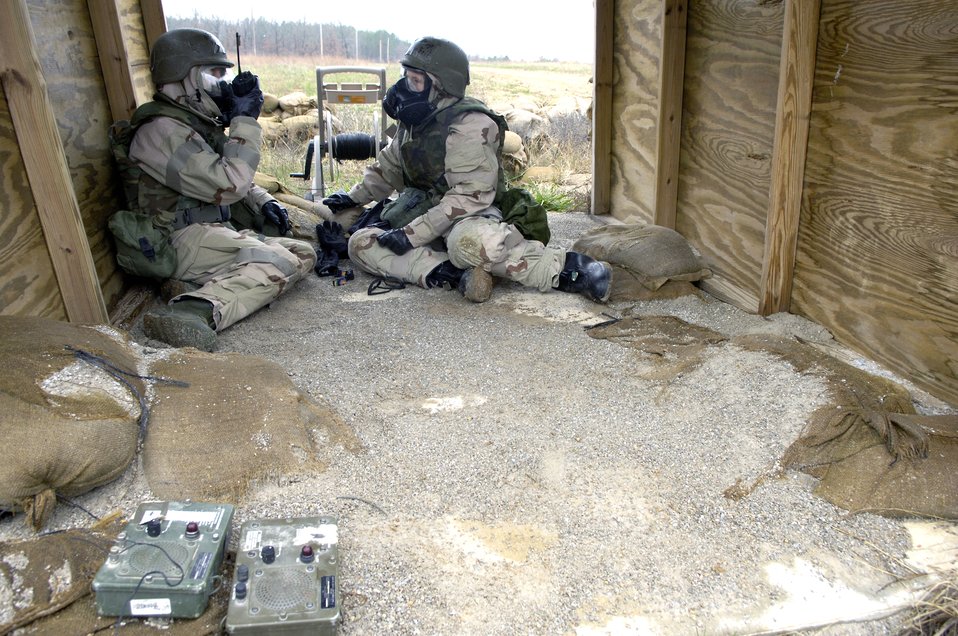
Readiness troops train for the future

Staff Sgts. Jenna Klinkenberg (left) and Jessica Feil take cover in a bunker during a simulated attack Nov. 16. The attack was part of a readiness training exercise at Fort Leonard Wood, Mo. The exercise is designed to give readiness Airmen training scenarios developed from lessons learned during operations Iraqi Freedom and Enduring Freedom. The two-day exercise is the part of a two-week training class here. Sergeant Klinkenberg is with the 3rd Civil Engineer Squadron, Elmendorf Air Force Base, Alaska, and Sergeant Feil is with Detachment 1, 823rd Red Horse, Tyndall AFB, Fla.